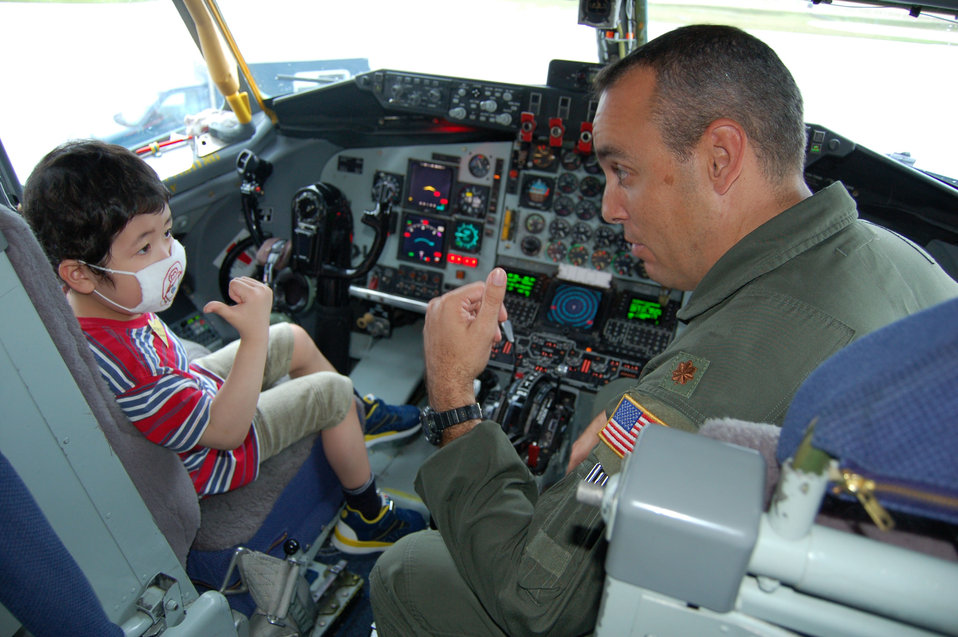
Andersen community makes a wish come true

Maj. Jerry Malloy shows 5-year-old Natsuki Takeda the cockpit of a KC-135 Stratotanker Dec. 5 at Andersen Air Force Base, Guam. Andersen AFB members teamed up with the Make-A-Wish Foundation of Guam to grant Natsuki's wish of seeing a military aircraft. Major Maloy is a a KC-135 instructor pilot with the 506th Expeditionary Air Refueling Squadron.